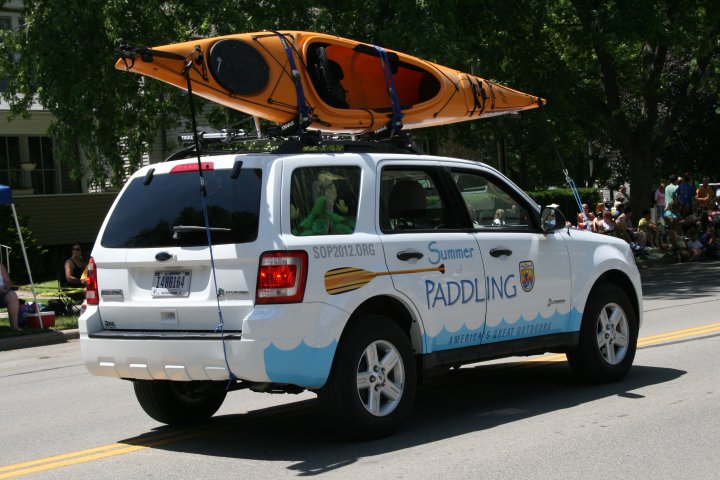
The Summer of Paddling Vehicle

The SOP vehicle at the Steamboat Days Parade.